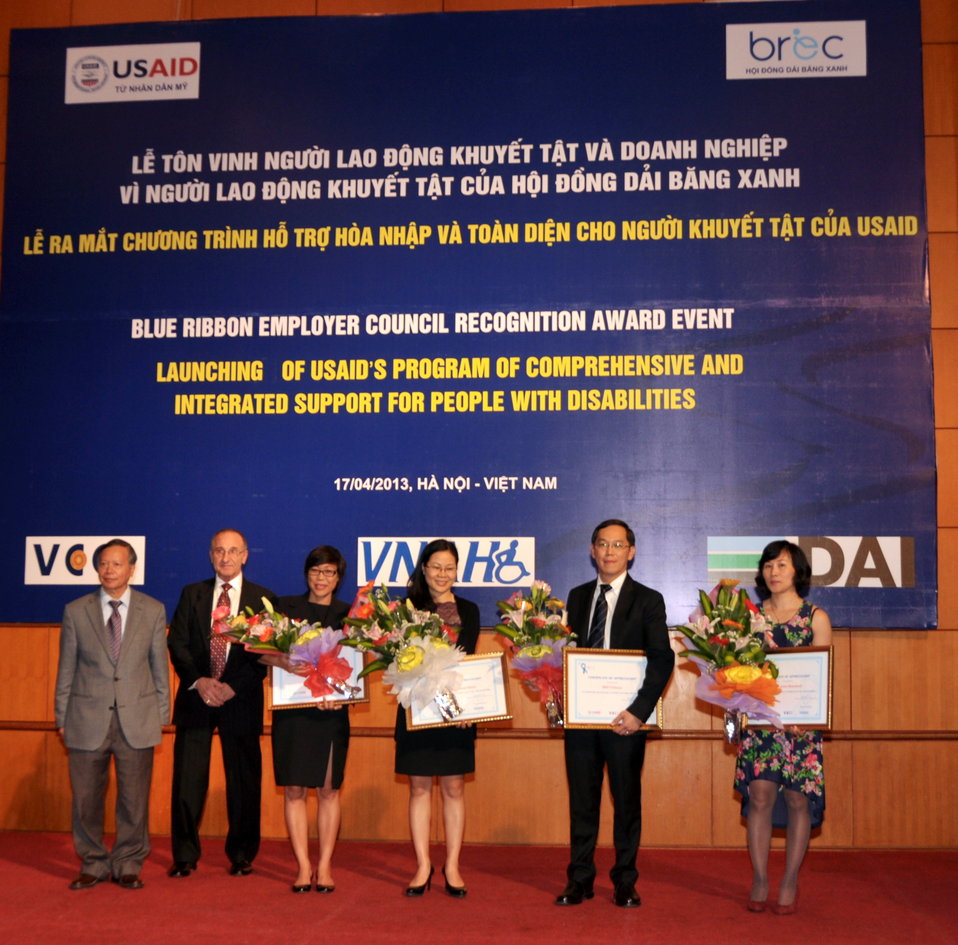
Blue Ribbon Employers Council Awards

Hanoi, April 17, 2013